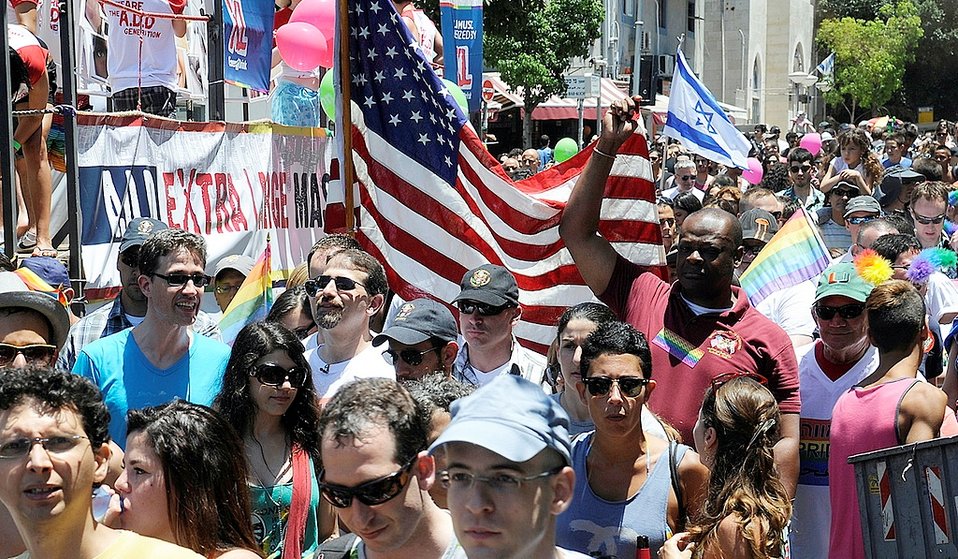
Ambassador Shapiro Participates in the Gay Pride Parade

U.S. Ambassador to Israel Dan Shapiro participates in the Gay Pride Parade in Tel Aviv, Israel, on June 8, 2012.